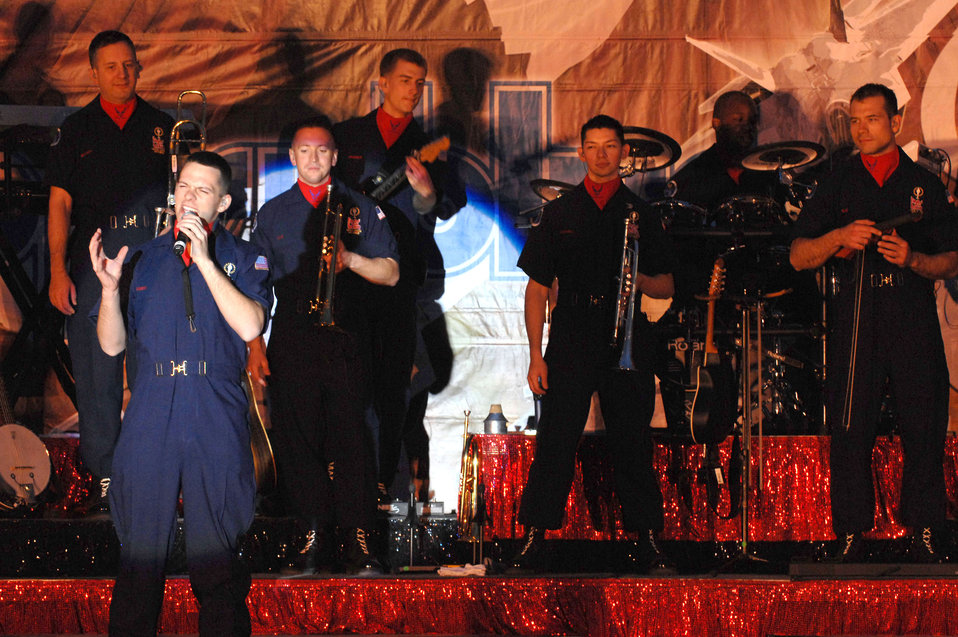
Tops in Blue perform for Airmen in Iraq

A Tops in Blue Airmen sings to Airmen and Soldiers April 26 at Kirkuk Air Base, Iraq. The 30-member group's goal is to enhance mission productivity for Air Force members around the world. Tops in Blue showcases music, dance and comedy -- all performed by active-duty Airmen who perform 90 minutes of non-stop live entertainment.